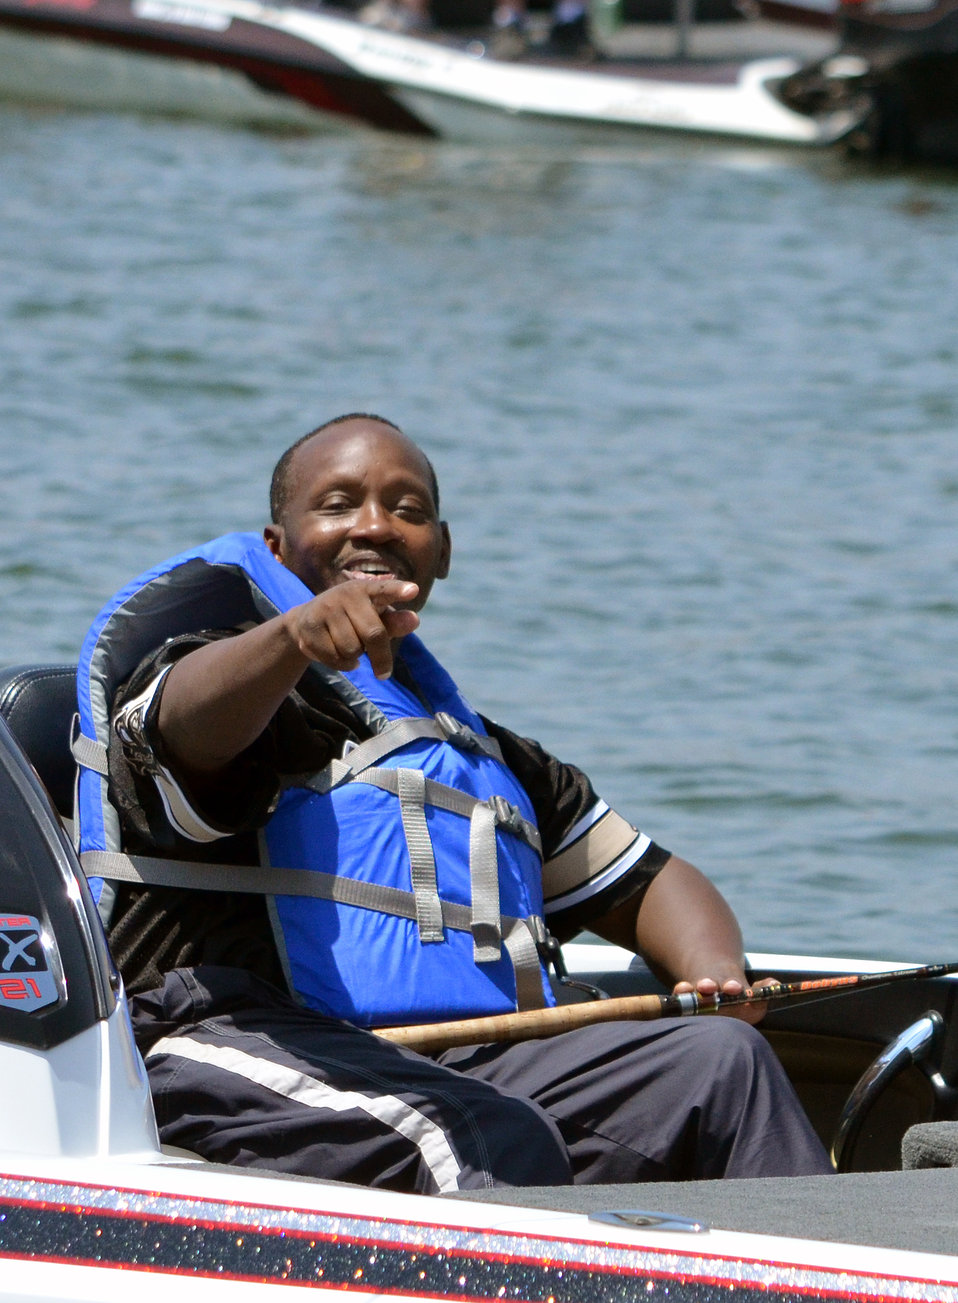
Happy warrior (“Take a Warrior Fishing” event at Success Lake)

Wounded warriors and their families enjoy a day fishing during the 'Take a Warrior Fishing' event at Success Lake, located near Porterville, Calif., May 4, 2013. This is the second year the U.S. Army Corps of Engineers Sacramento District has hosted the event. Photo cropped for emphasis.